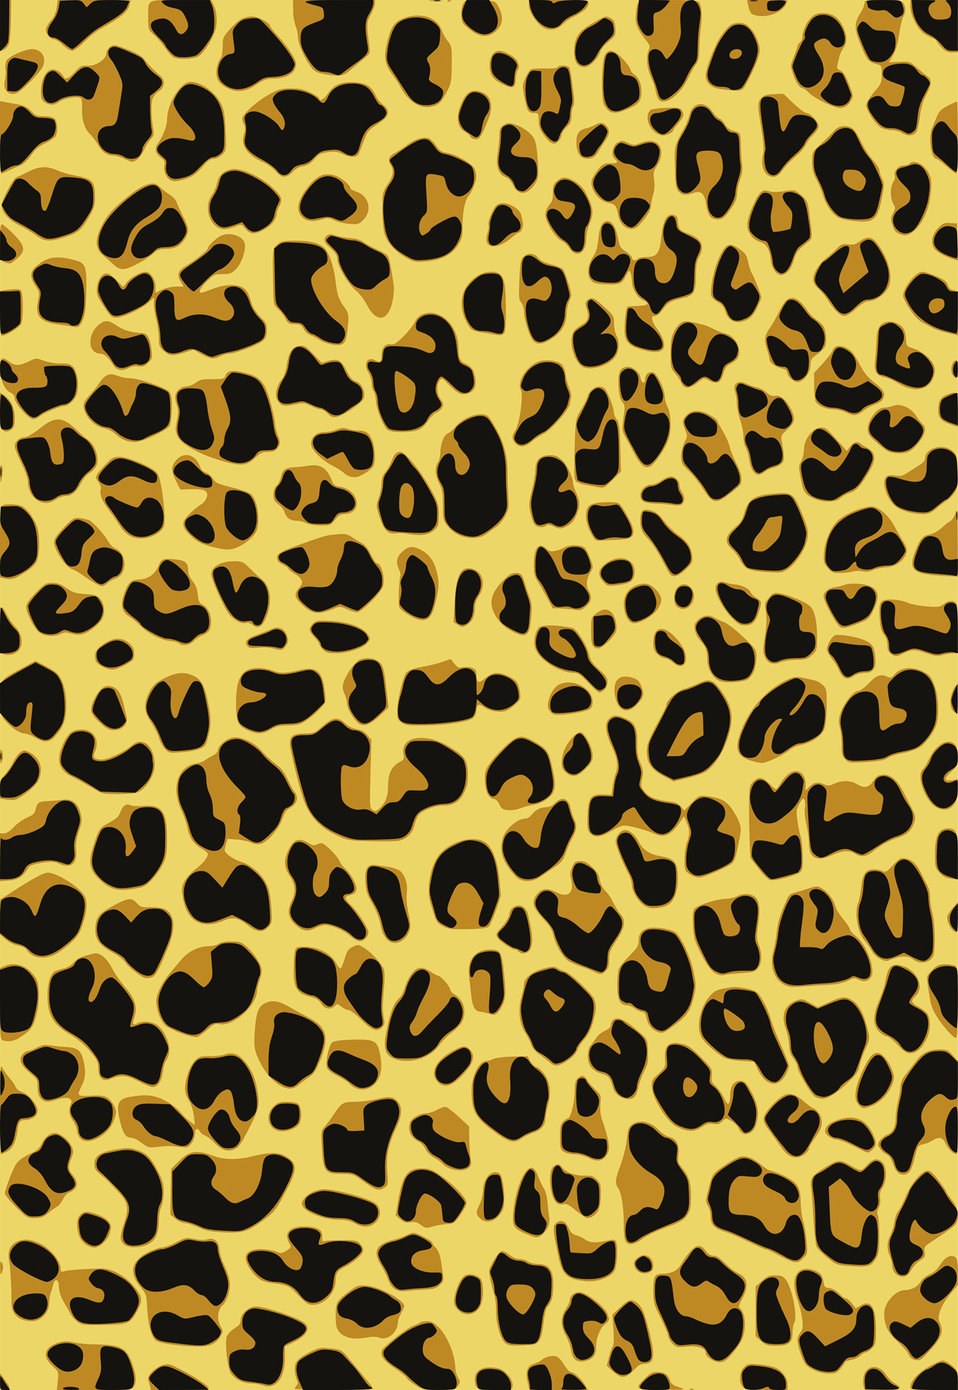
Jaguar fur

A jaguar fur pattern (tileable).